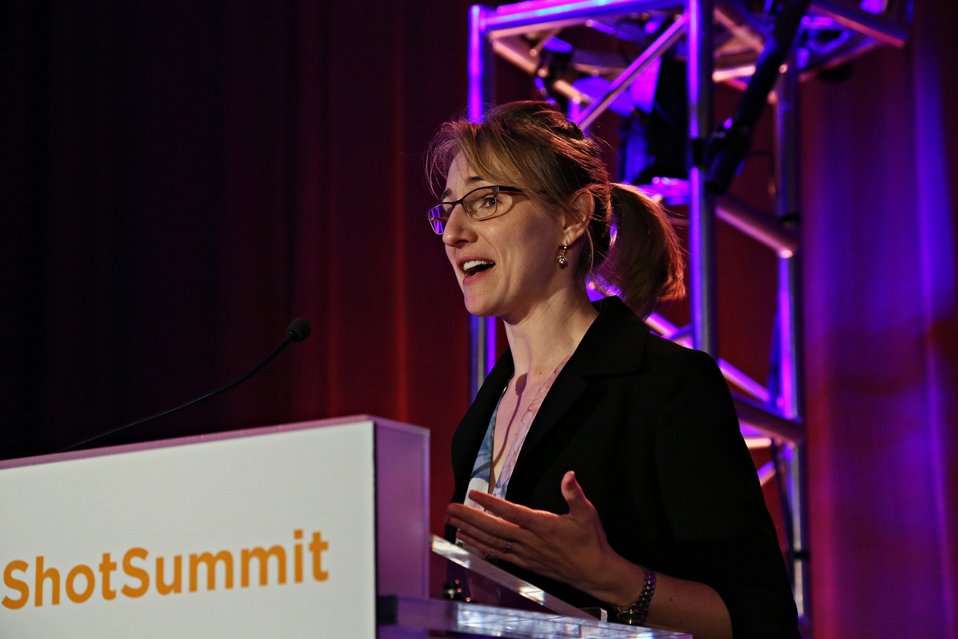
Keynote Session 8

Elaine Ulrich, Acting Balance of Systems/Soft Costs Program Manager giving a keynote address.